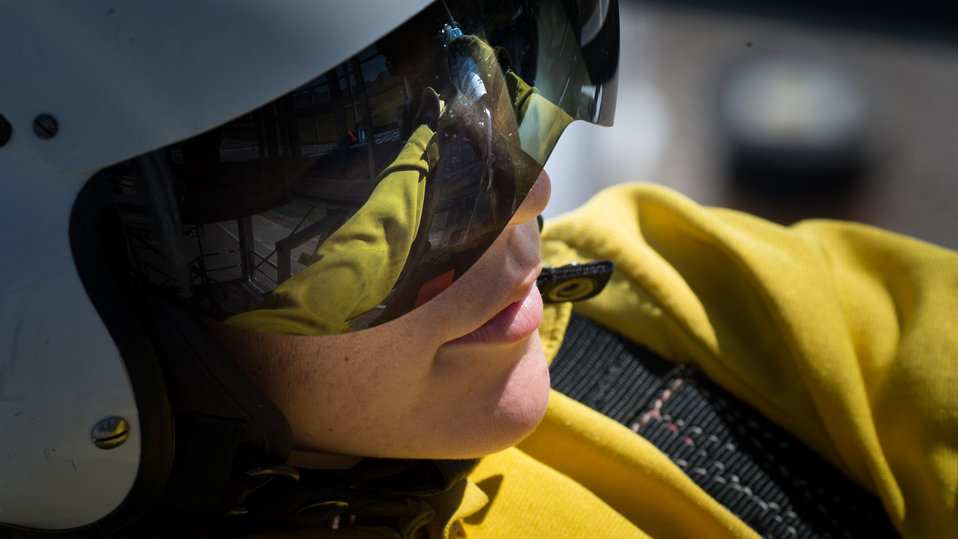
Veteran wildland firefighter rappeller Lacie England practices rappeling from a 40-foot rappel training tower at the U.S. Department of Agriculture (USDA) U.S. Forest Service (USFS) National Helicopter Rappel Program’s Rappel Academy at Salmon Air Base in Salmon, ID on Wednesday, May 14, 2014. From May 12, 2014, 72 veteran rappellers from all over the nation, 30 support staff, and three helicopters with flight crews attend the training at Salmon Air Base. Participants will rappel into the Perreau Creek area. The annual training is delivered in accordance with the National Rappel Operations Guide; strengthen leadership, teamwork, and communications within the rappel community, and produces quality aerial delivered firefighters for use in fire and aviation operations. The USDA Forest Service National Helicopter Rappel Program’s primary mission is initial attack. Rappel crews may be utilized for large fire support, all hazard incident operations, and resource management objectives.